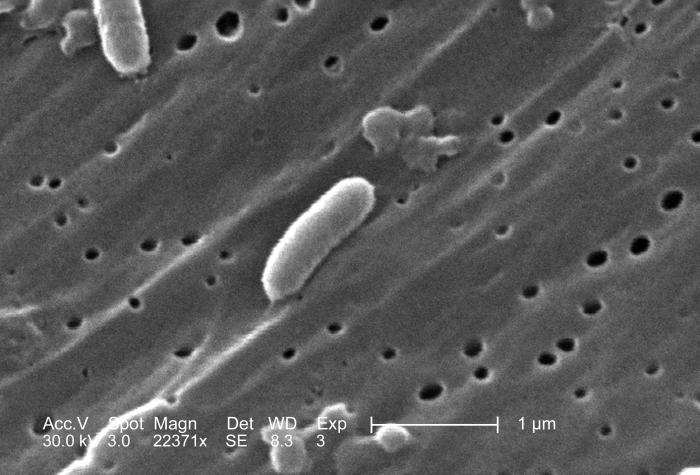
This scanning electron micrograph (SEM) depicted a number of Vibrio cholerae bacteria of the serogroup 01; Magnified 22371x.